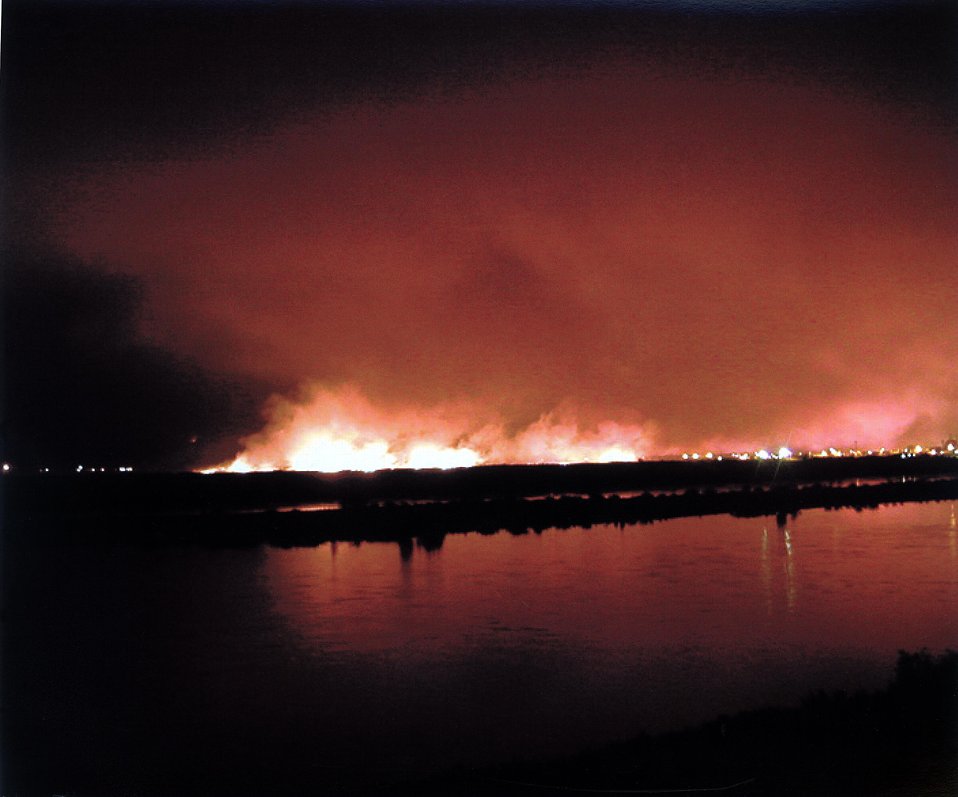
Fire at Hanford Site, July, 2000.